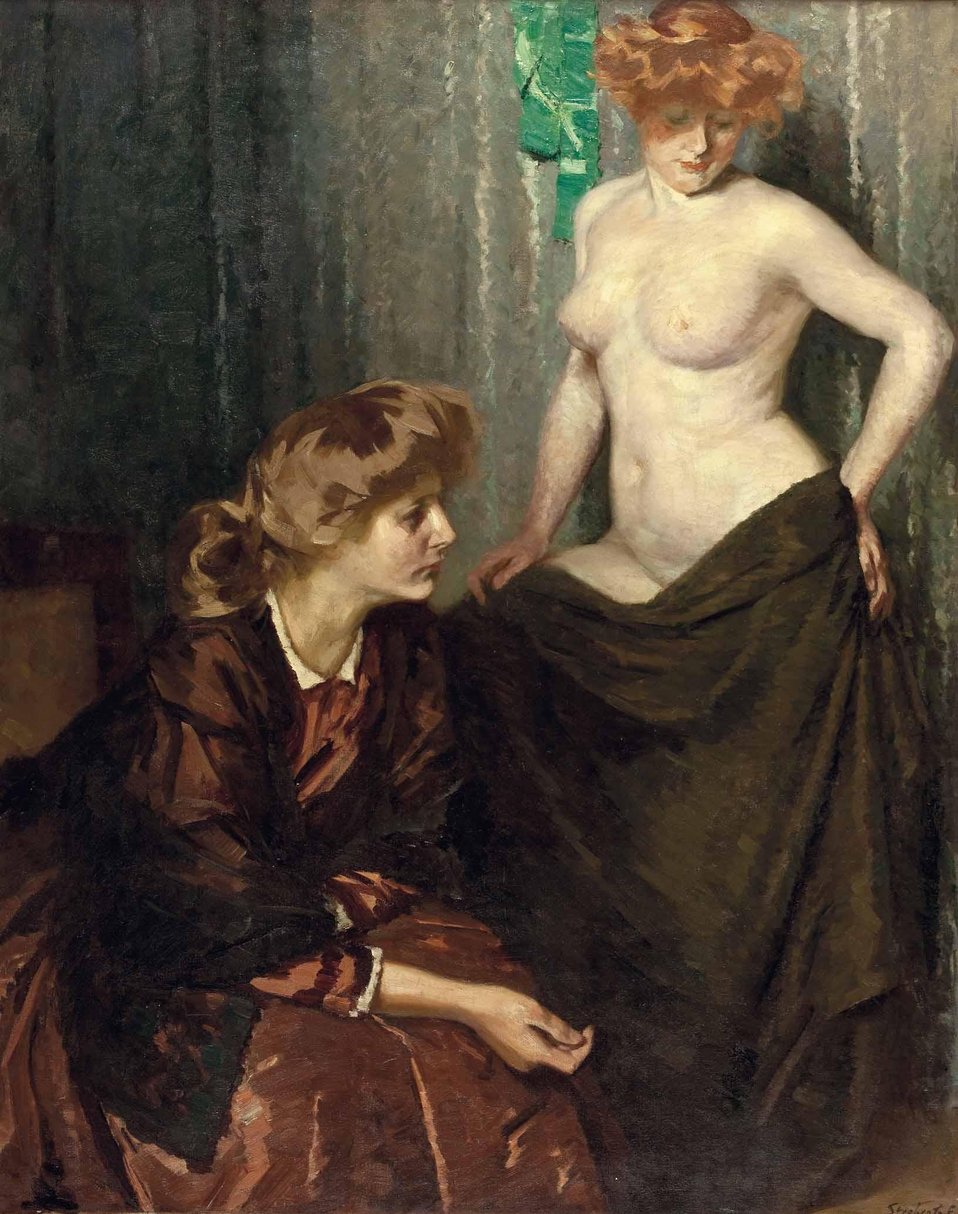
Frigyes Strobentz Die Modelle